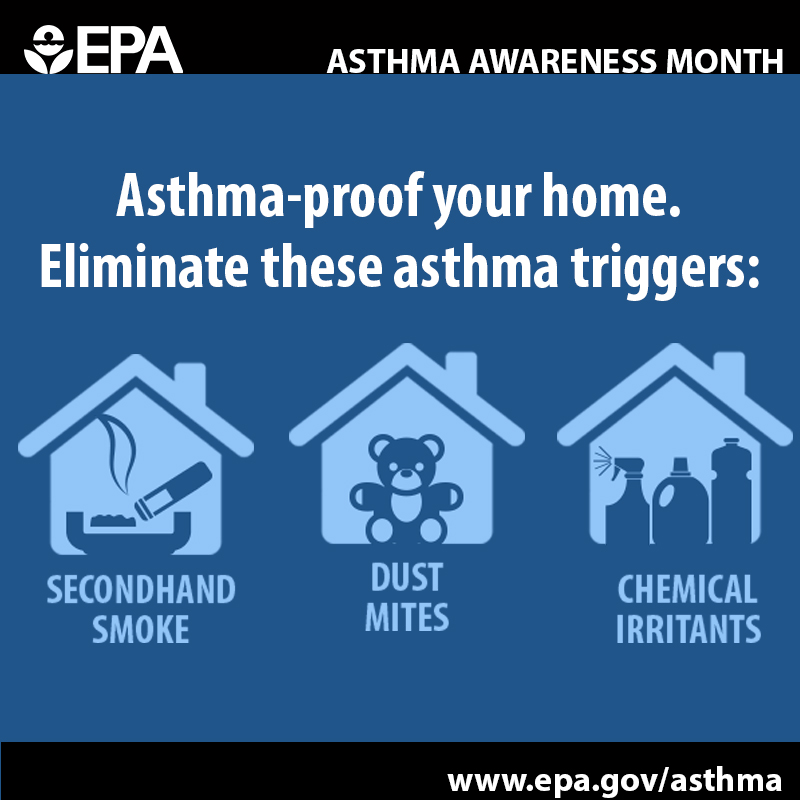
ELIMINATE TRIGGERS

Get rid of these #asthma triggers for a healthier home: secondhand smoke, dust mites, and chemical irritants.